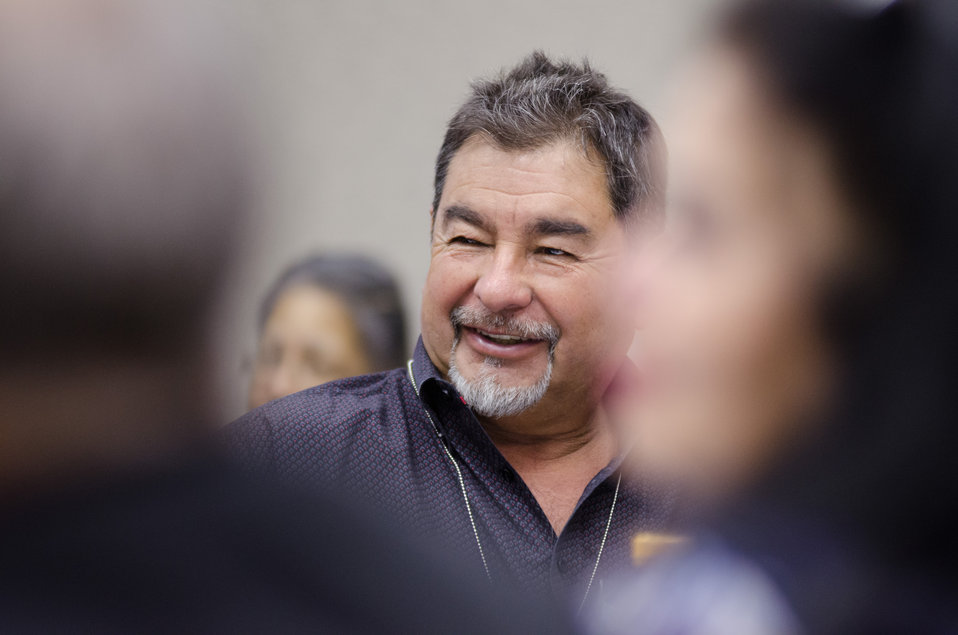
Farmer/Rancher Edward Soza of the Soboba Band of Luiseno Indians, in Banning, Calif., during the first administrative/training meeting of the U.S. Department of Agriculture's (USDA) Council for Native American Farming and Ranching (CNAFR) held on Monday, Aug. 13, 2012 at the USDA headquarters Whitten Building, in Washington, D.C. CNAFR was created to advise the Secretary on ways to eliminate barriers to participation for Native American Farmers and Ranchers in USDA programs. The Council was established as part of the Keepseagle settlement, and is conducted under the oversight of USDA's Office of Tribal Relations, which is part of the Office of the Secretary of Agriculture. The Director of Tribal Relations Joanna Mounce Stancil serves as Designated Federal Official (DFO) for the Council.